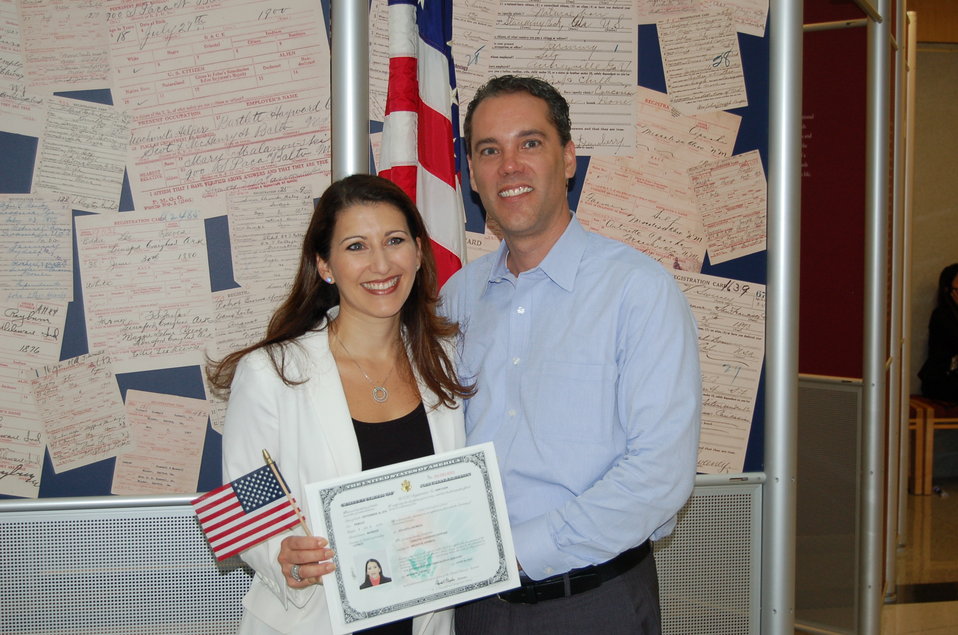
New Citizens